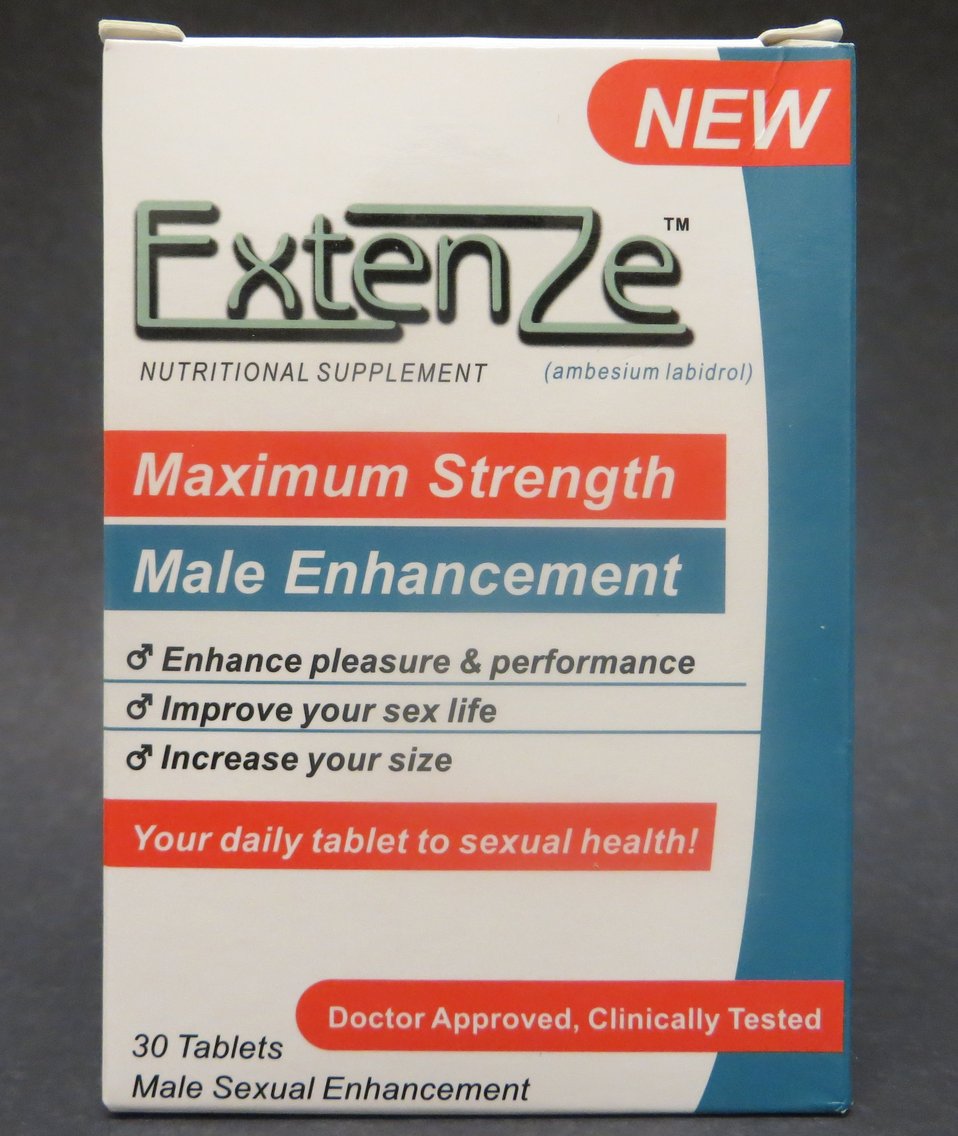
New Extenze

January 9, 2014 - The FDA is advising consumers not to purchase or use 'New Extenze,' a product promoted and sold for sexual enhancement. The product was found to contain undeclared sildenafil and/or tadalafil. For more information, go to www.fda.gov/Safety/Recalls/ucm381299.htm

And read this Consumer Update: Beware of Fraudulent ‘Dietary Supplements’